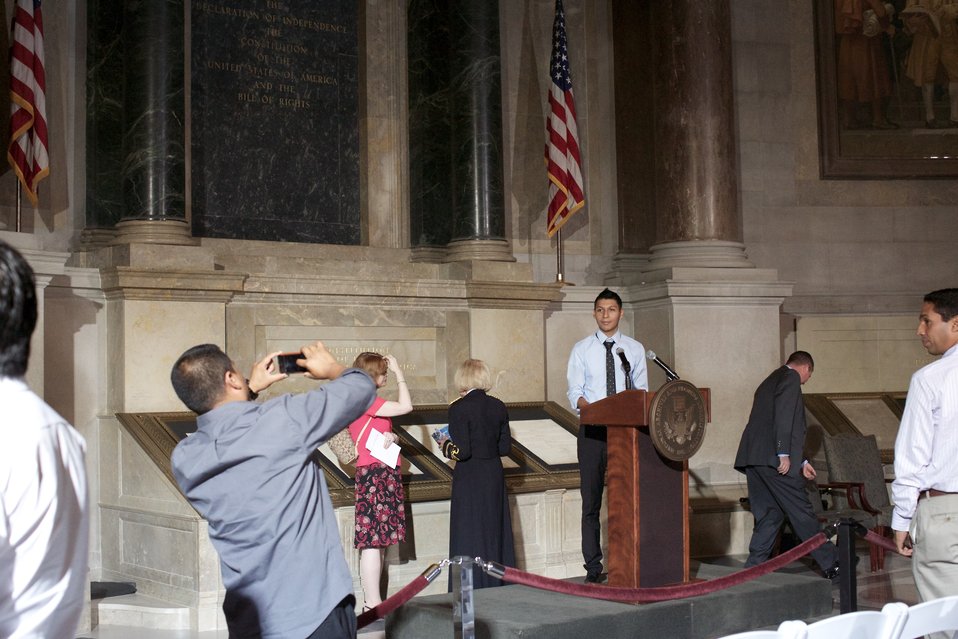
Naturalization Ceremony with Michelle Obama